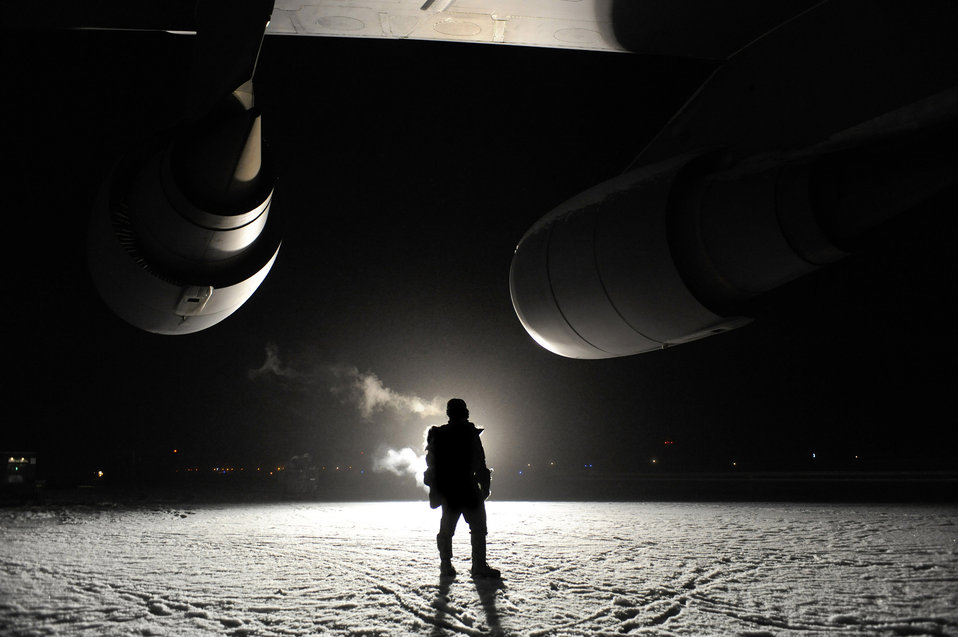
Super Galaxy endures super cold weather

Master Sgt. Jorge Orama checks for leaks on a C-5M Super Galaxy engine after the aircraft sat outside for more than 24 hours in temperatures as low as minus 25 degrees during a cold weather test Dec. 14 at Eielson Air Force Base, Alaska. Sergeant Orama is assigned to the Air Mobility Command Test and Evaluation Squadron Det. 1 at Edwards AFB, Calif.